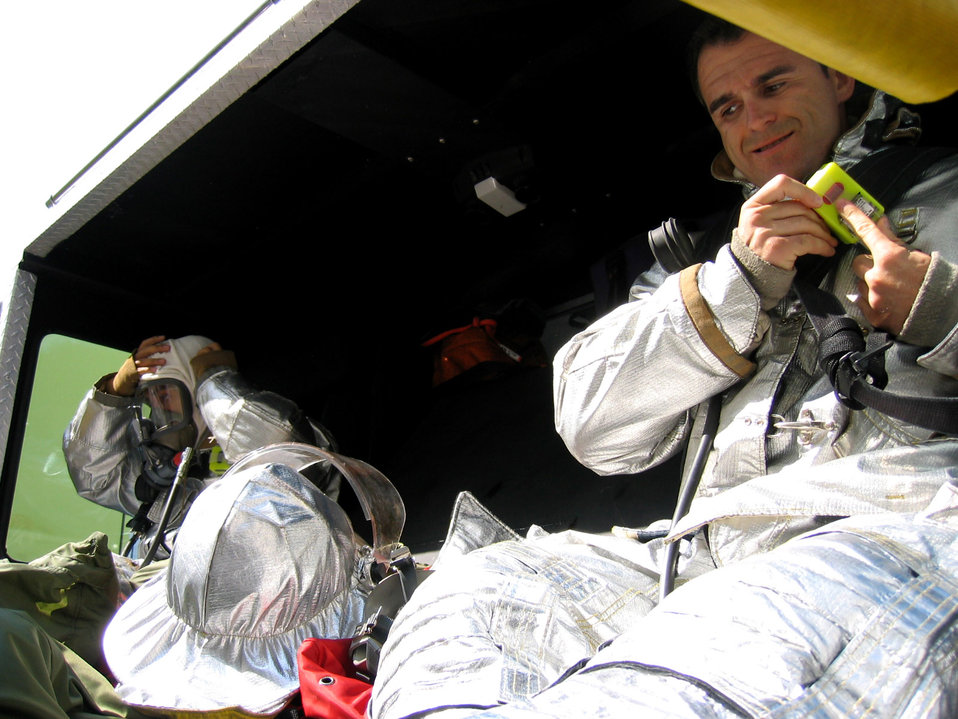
American, Portuguese firefighters work, train together

Airman 1st Class Noel Magtanong (left) and Portuguese firefighter Paulo Azera don their gear in the back of a fire truck on their way to a flight line exercise June 21 at Lajes Field, Portugal. Portuguese and American firefighters routinely work together to save lives and property.